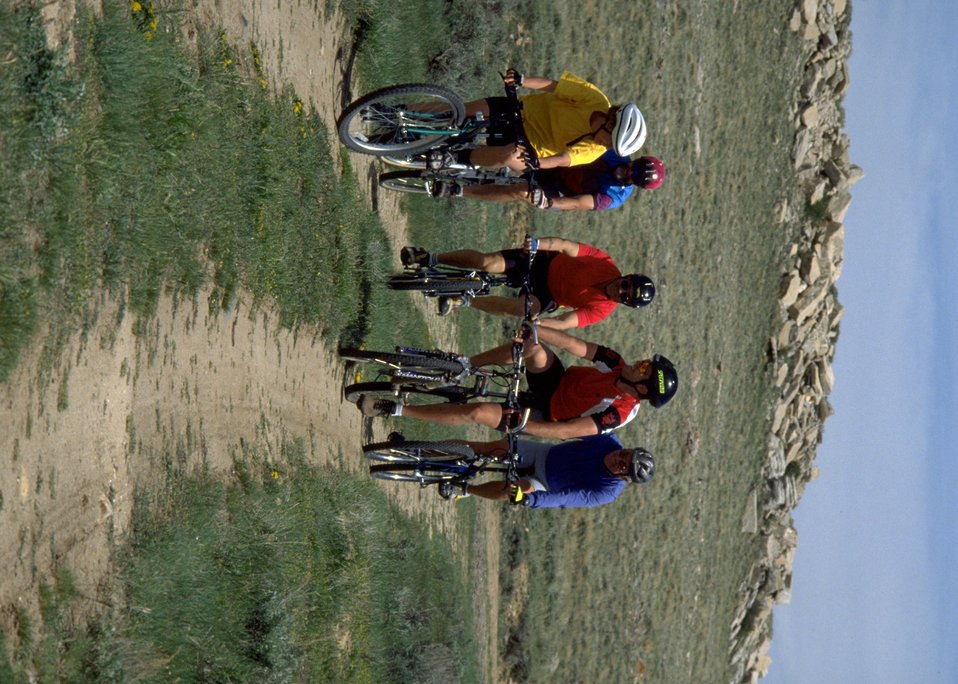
Bike riding on an unknown trail.